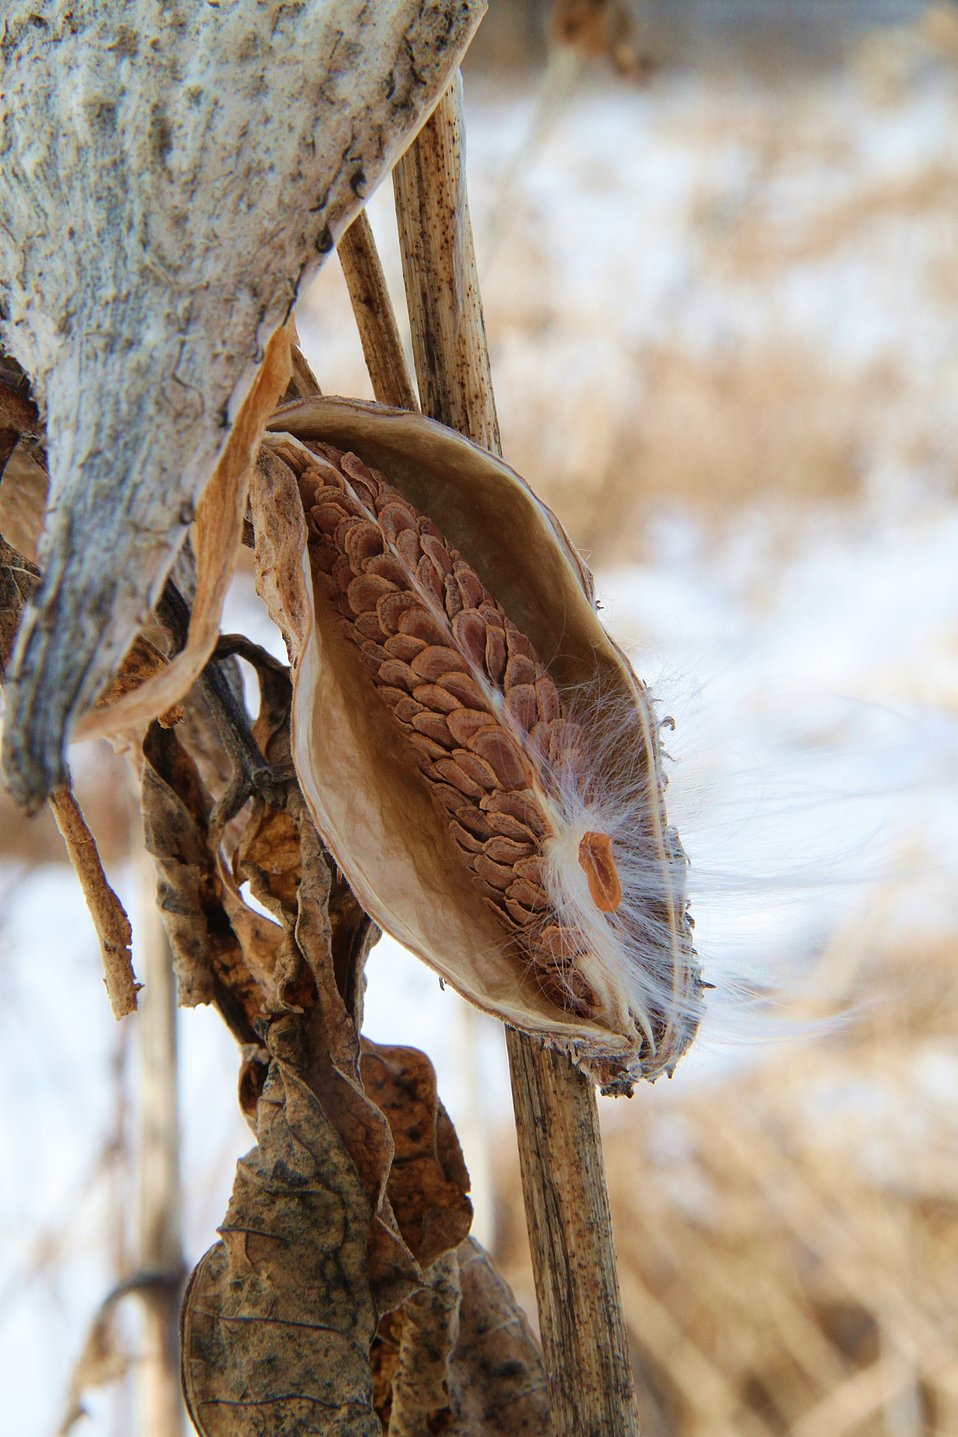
Photo of the Week - Spring's Promise in Mid Winter (VT)

Photo of the Week - 2/6/12

Seeds of a milk weed ready to disperse at Missisquoi National Wildlife Refuge, Vermont.